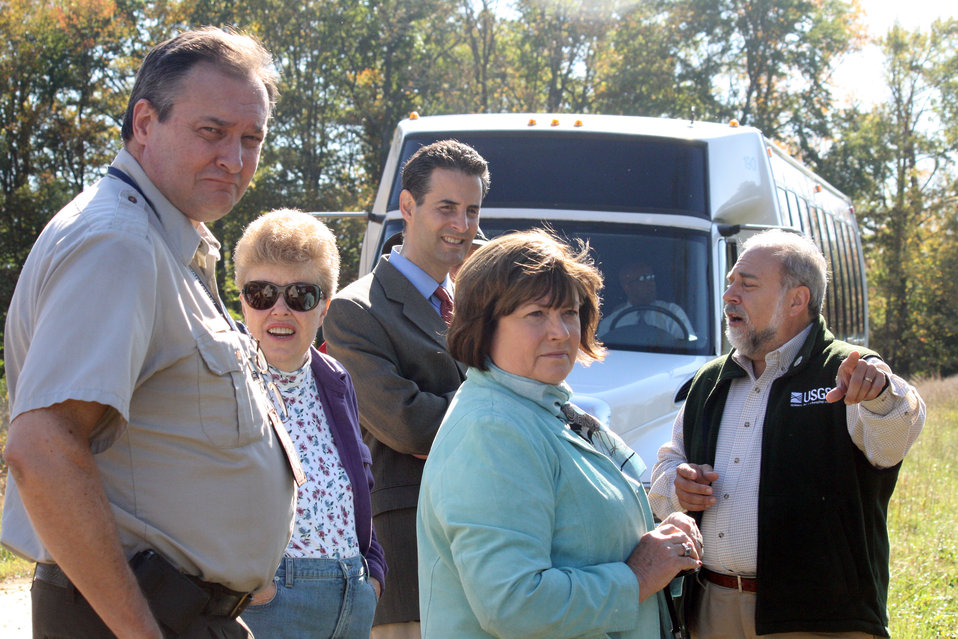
Patuxent Research Refuge 75th Anniversary

Representative John Sarbanes and Deputy Director of the USGS, Suzette Kimball receive a tour of the Whooping Crane Observatory.